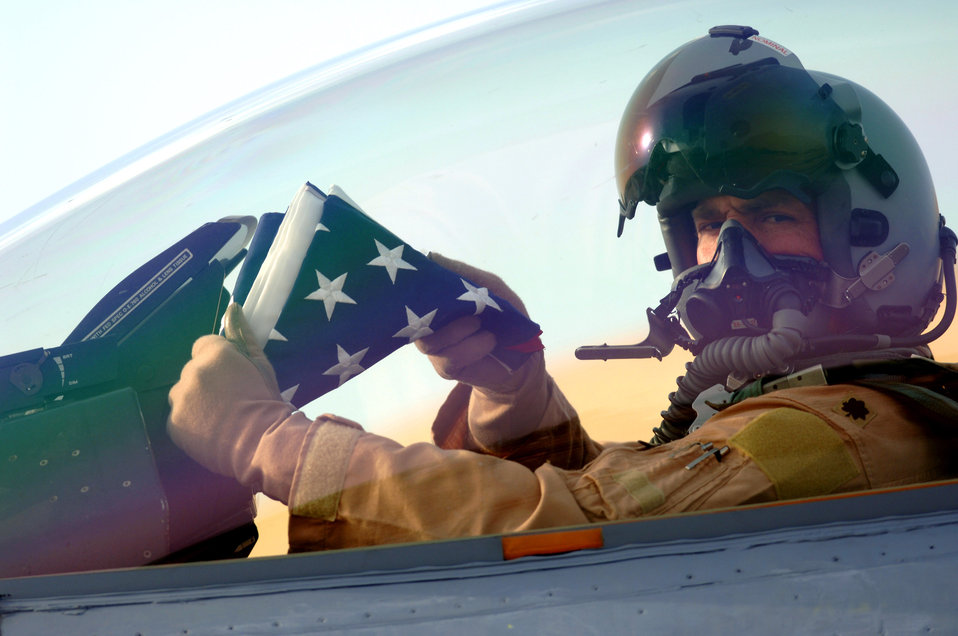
Buckle up

Lt. Col. Chris Ashby sits in an F-16 Fighting Falcon and displays the U.S. flag before departing on a combat mission over Iraq, Jan. 29 from Balad Air Base, Iraq. Colonel Ashby is the 332nd Air Expeditionary Wing chief of Safety deployed from the 20th Fighter Wing, Shaw Air Force Base, S.C.